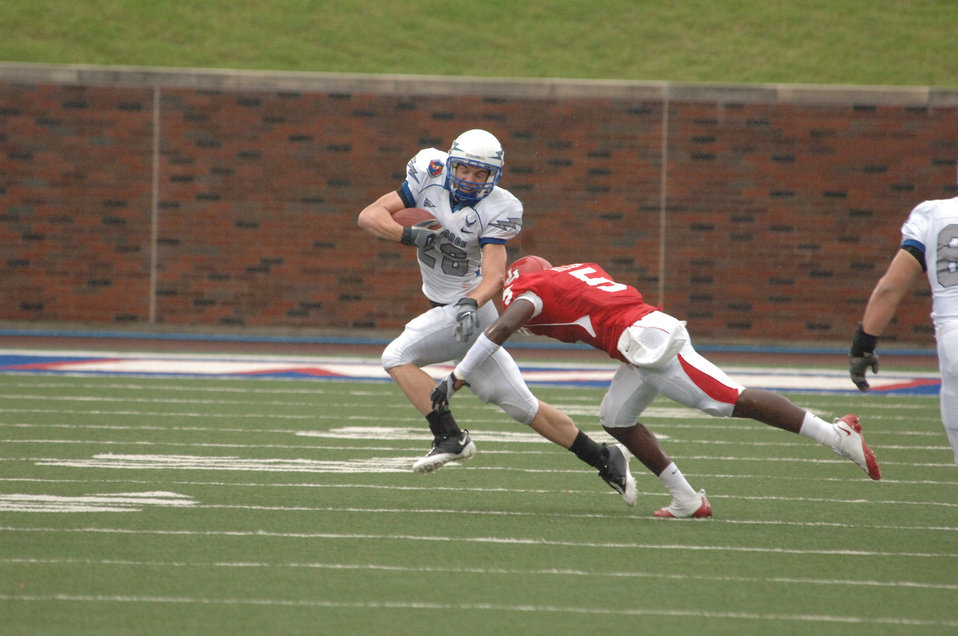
Football: Falcons hold off Cougars in wake of Hurricane Ike

U.S. Air Force Academy receiver Spencer Armstrong works to slip around Houston Cougar safety Ernest Miller to break free for a 55 yard run Sept. 13 in Dallas. Falcon backs ran 71 times for 380 yards to secure a 31-28 win over Houston and advance to 3-0 on the season.